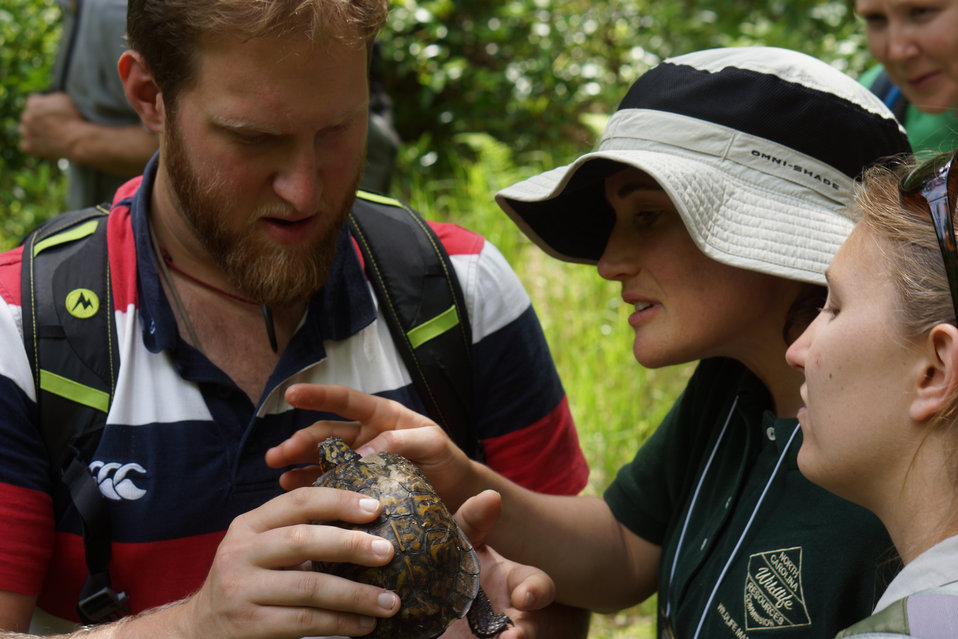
Clint DeWitt and Gabrielle Graeter

In May, bog conservationists from Tennessee, North Carolina, and Georgia convened in the north Georgia mountains for the spring, 2014 meeting of the Bog Learning Network. The event provided an opportunity for biologists to see, first hand, the result of management efforts at two north Georgia bogs. More importantly, the outings provided an opportunity to share innovative approaches to bog management, such as the role of the Georgia Plant Conservation Alliance in conserving rare plants and coordinating a cadre of volunteers to work on bog management.

The Bog Learning Network was convened in the winter of 2013 as a way to bring together people working for bog conservation across the Southern Appalachians. Southern Appalachian bogs are one of North America’s rarest habitats and home to many rare plants and animals.